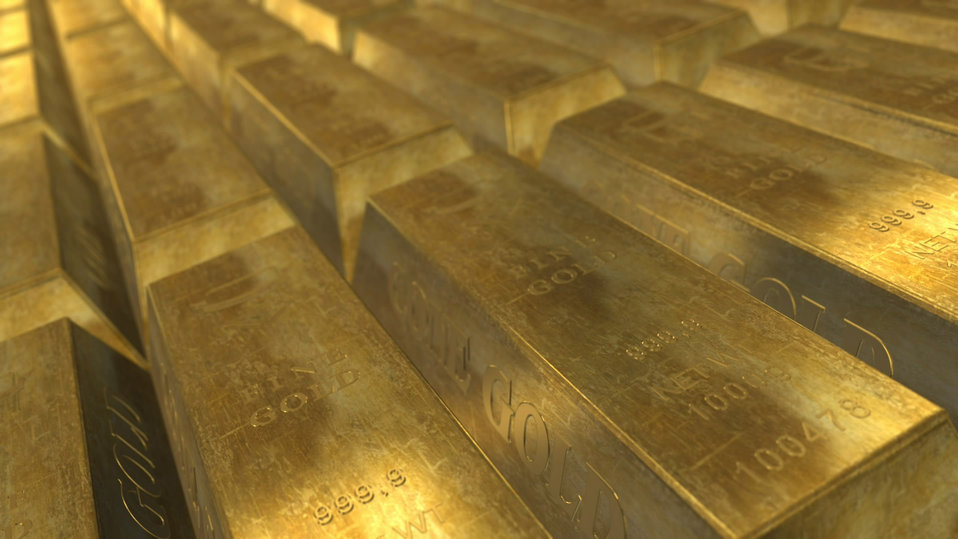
Gold bullion

Golden bars in large quantities.